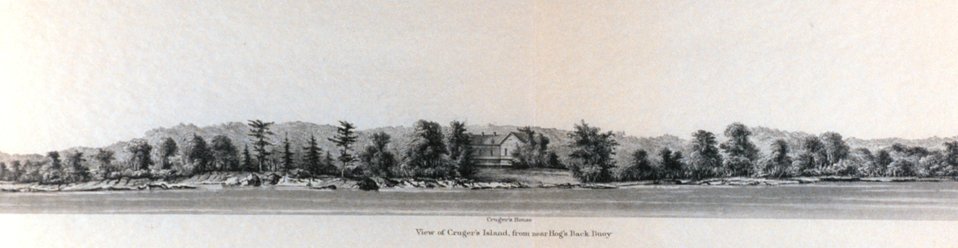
View of Cruger's Island, from near Hog's Back Buoy. On the Hudson River. In: Atlantic Local Coast Pilot Sub-Division 13 South Coast of Long Island New York Bay and Hudson River 1880. P. 612. Library Call Number VK981.A3 1879 Sub-13 2nd ed. 1880.